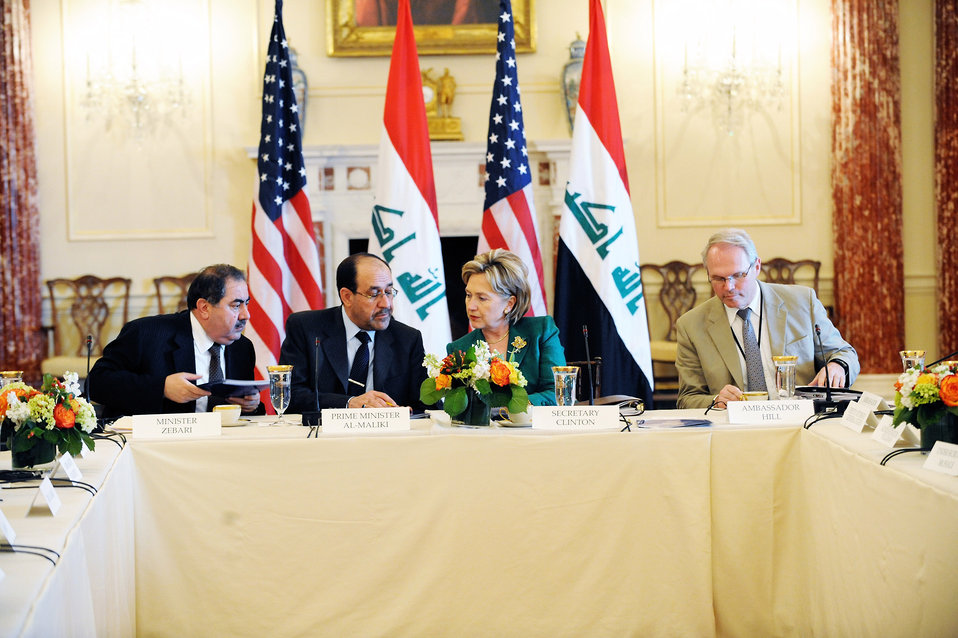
U.S.-Iraq High Coordinating Committee Meeting

U.S. Secretary of State Hillary Rodham Clinton holds U.S.-Iraq High Coordinating Committee Meeting with His Excellency Nouri al-Maliki, Prime Minister of the Republic of Iraq at the U.S. Department of State in Washington, DC July 24, 2009.